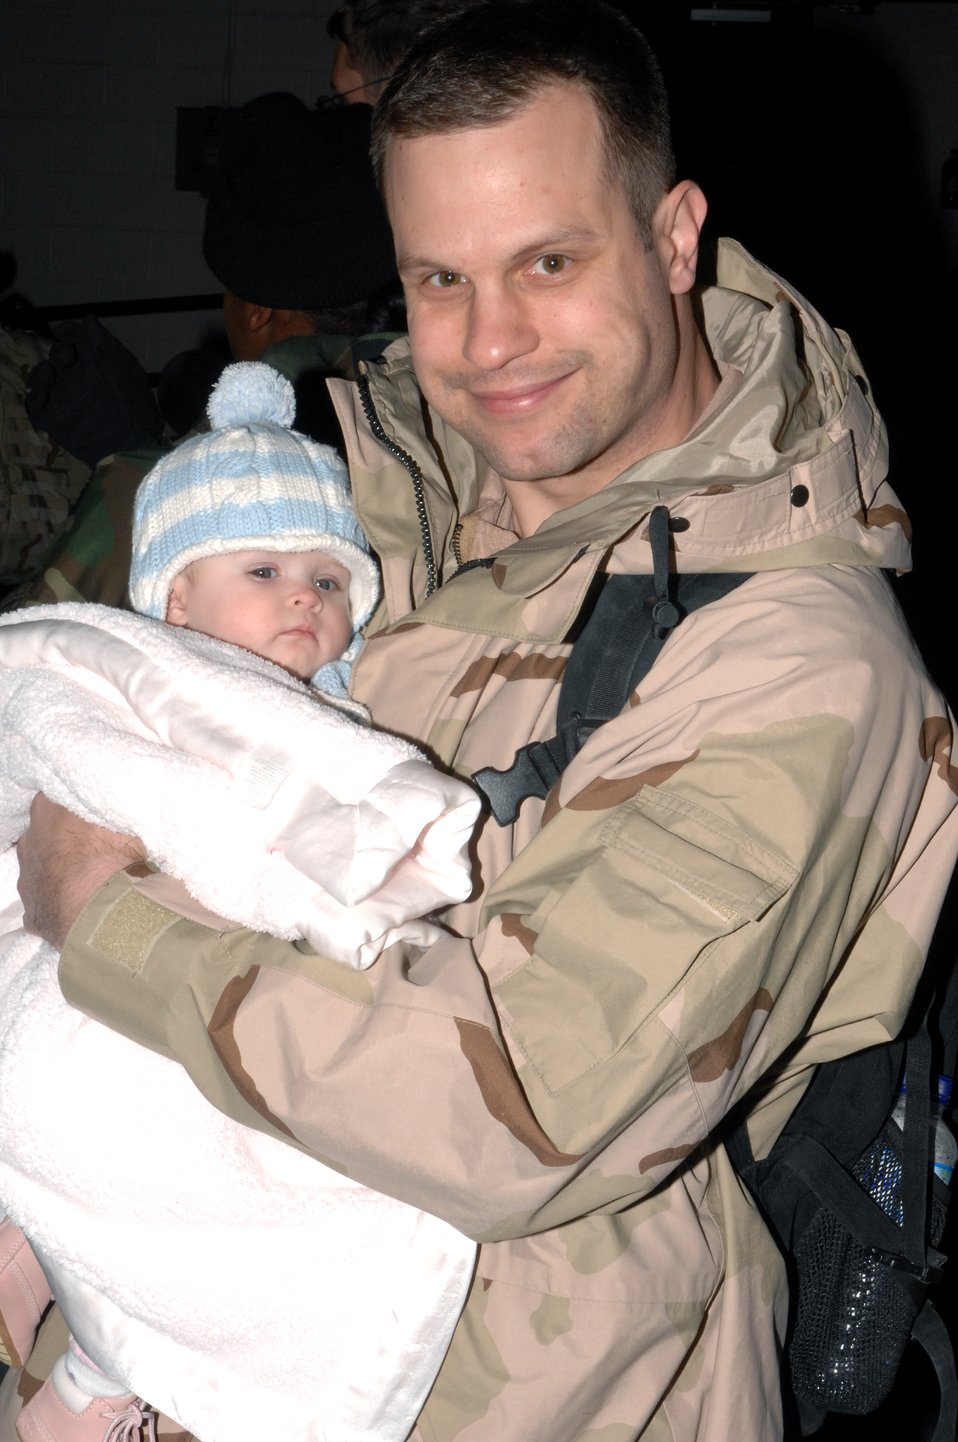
Welcome home

Maj. Benjamin Wysack holds his daughter, Lola, after returning home from a deployment to Iraq Jan 18 at Cannon Air Force Base, N.M. Major Wysack and other Airmen from Cannon AFB were serving as part of the Air Expeditionary Force 3 and 4 rotation. Major Wysack is assigned to the 523rd Fighter Squadron.